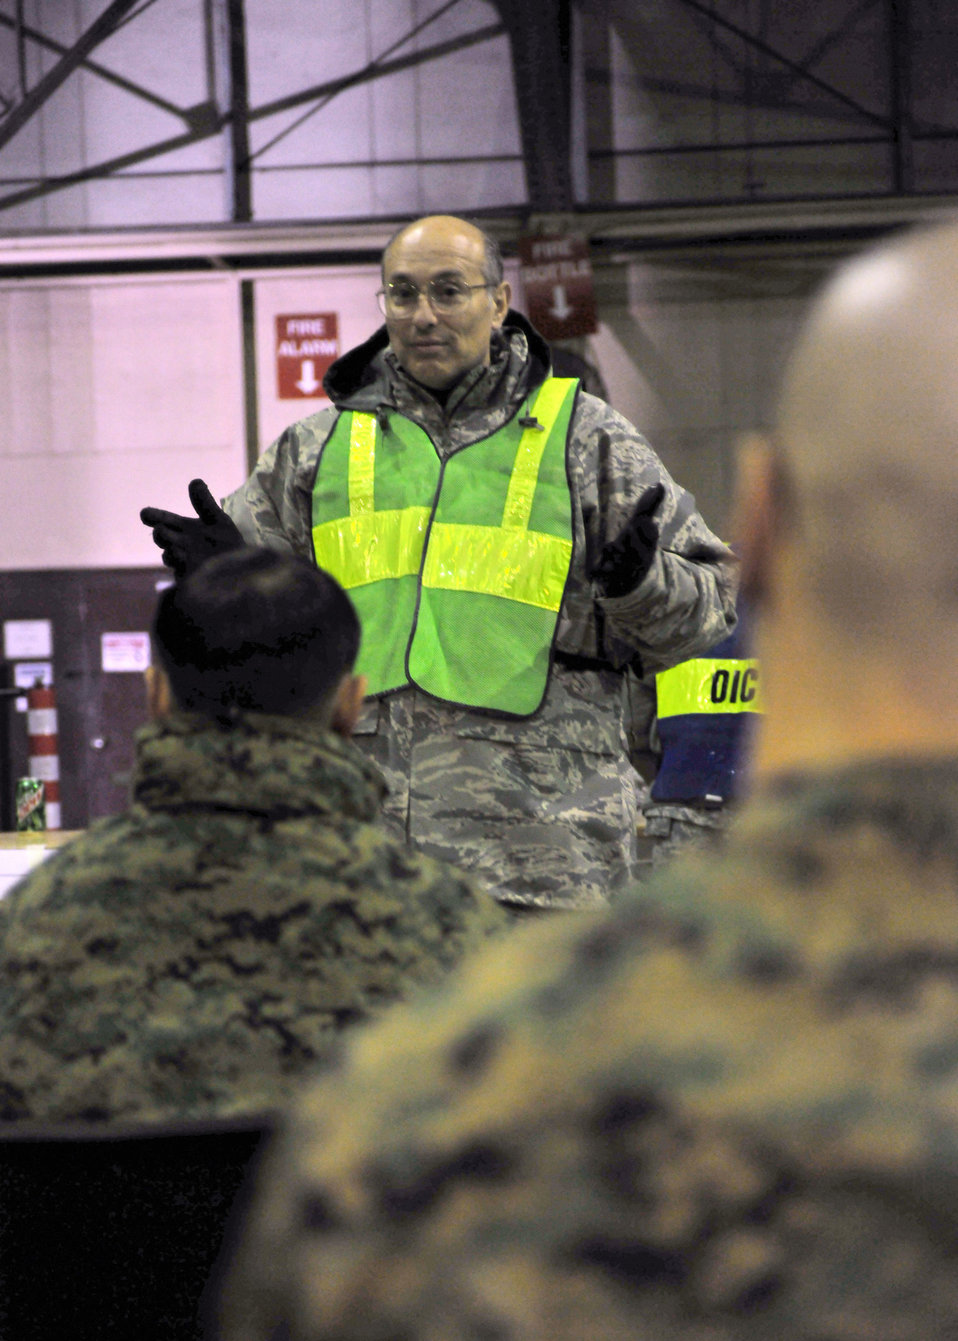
Staging relief

U.S. Air Force Lt. Col. Mark Sahady, a 374th Airlift Wing chaplain, briefs the first wave of American earthquake and tsunami disaster relief forces at Yokota Air Base, Japan, March 12, 2011. Yokota is receiving personnel, aircraft and supplies to support search and rescue efforts as requested by the government of Japan.